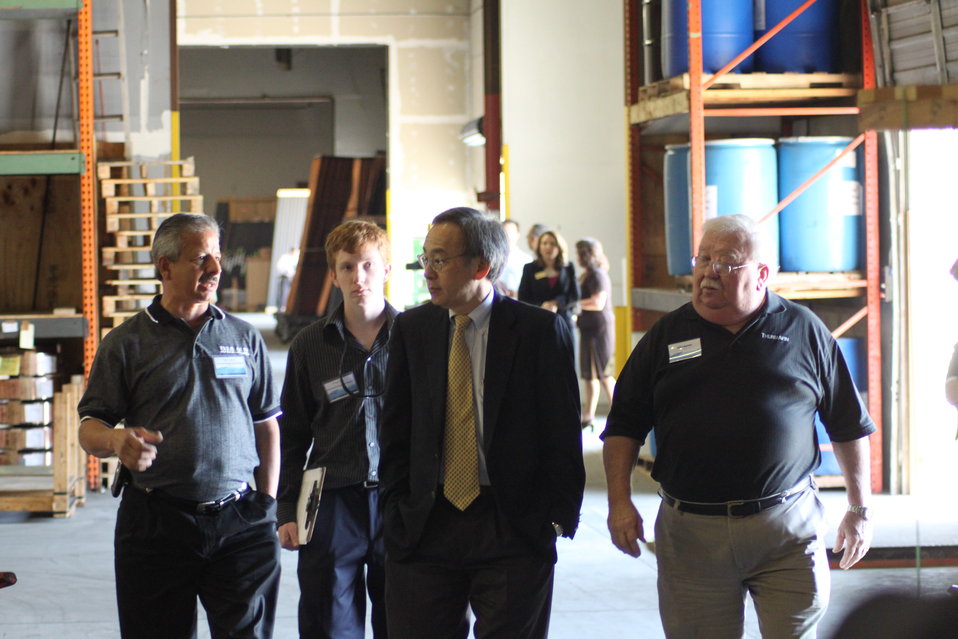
Norm 025